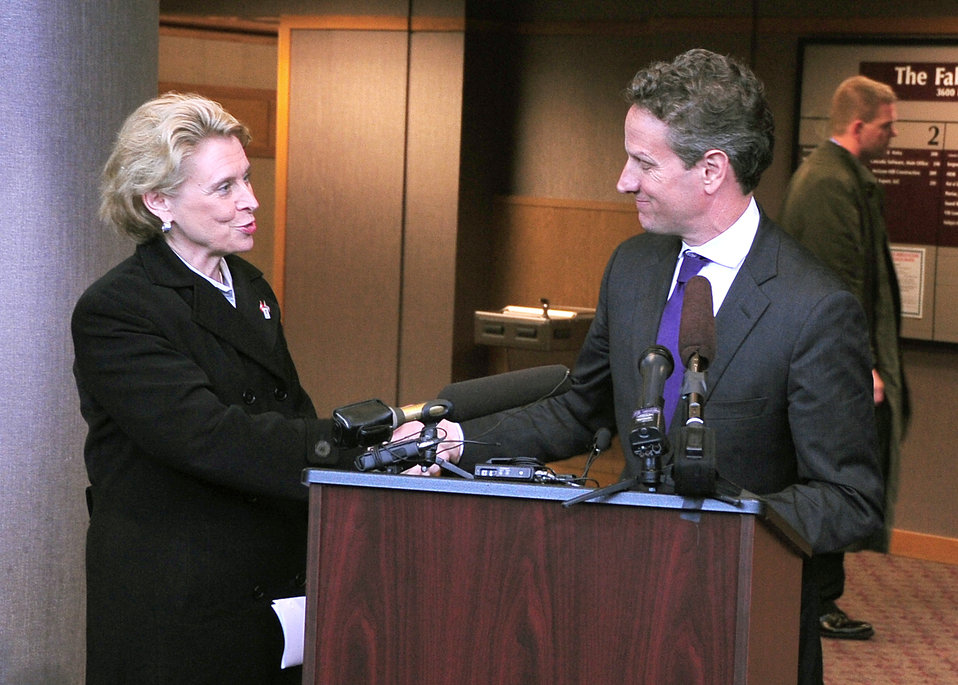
Tacoma, 5/18/2010

Secretary Geithner at a press conference at the Port of Tacoma with Governor Gregoire to discuss the importance of U.S. exports.